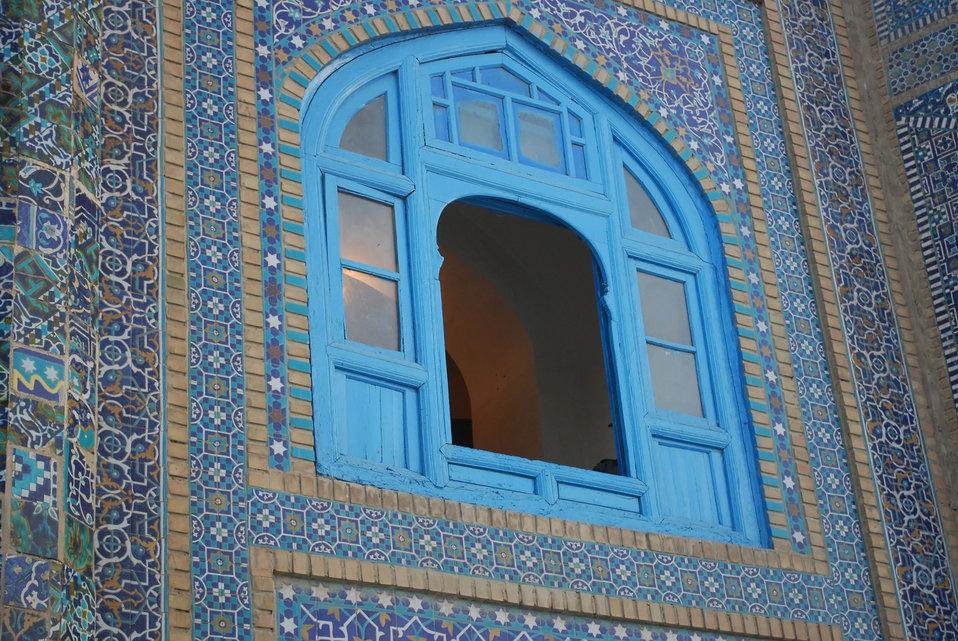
'On the Road' in Balkh Province